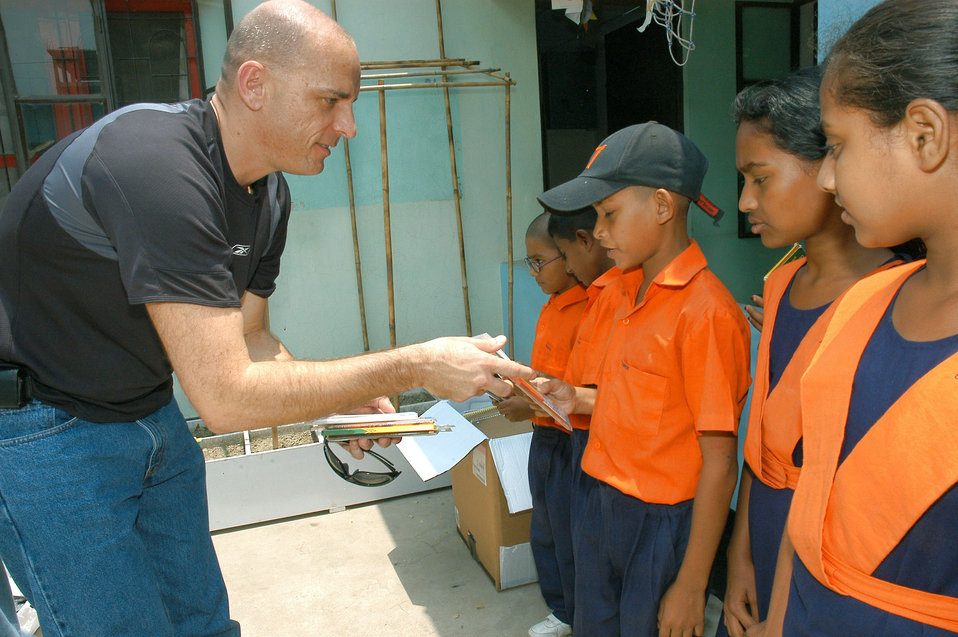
Special operations Airmen reach out to Bangladesh school

Senior Master Sgt. Jerry Wilkerson distributes school supplies at Eglal's ABC School April 27 in Dhaka, Bangladesh. Sergeant Wilkerson and other members of the 353rd Special Operations Group are training with the Bangladesh air force during Exercise Teak Buffalo.